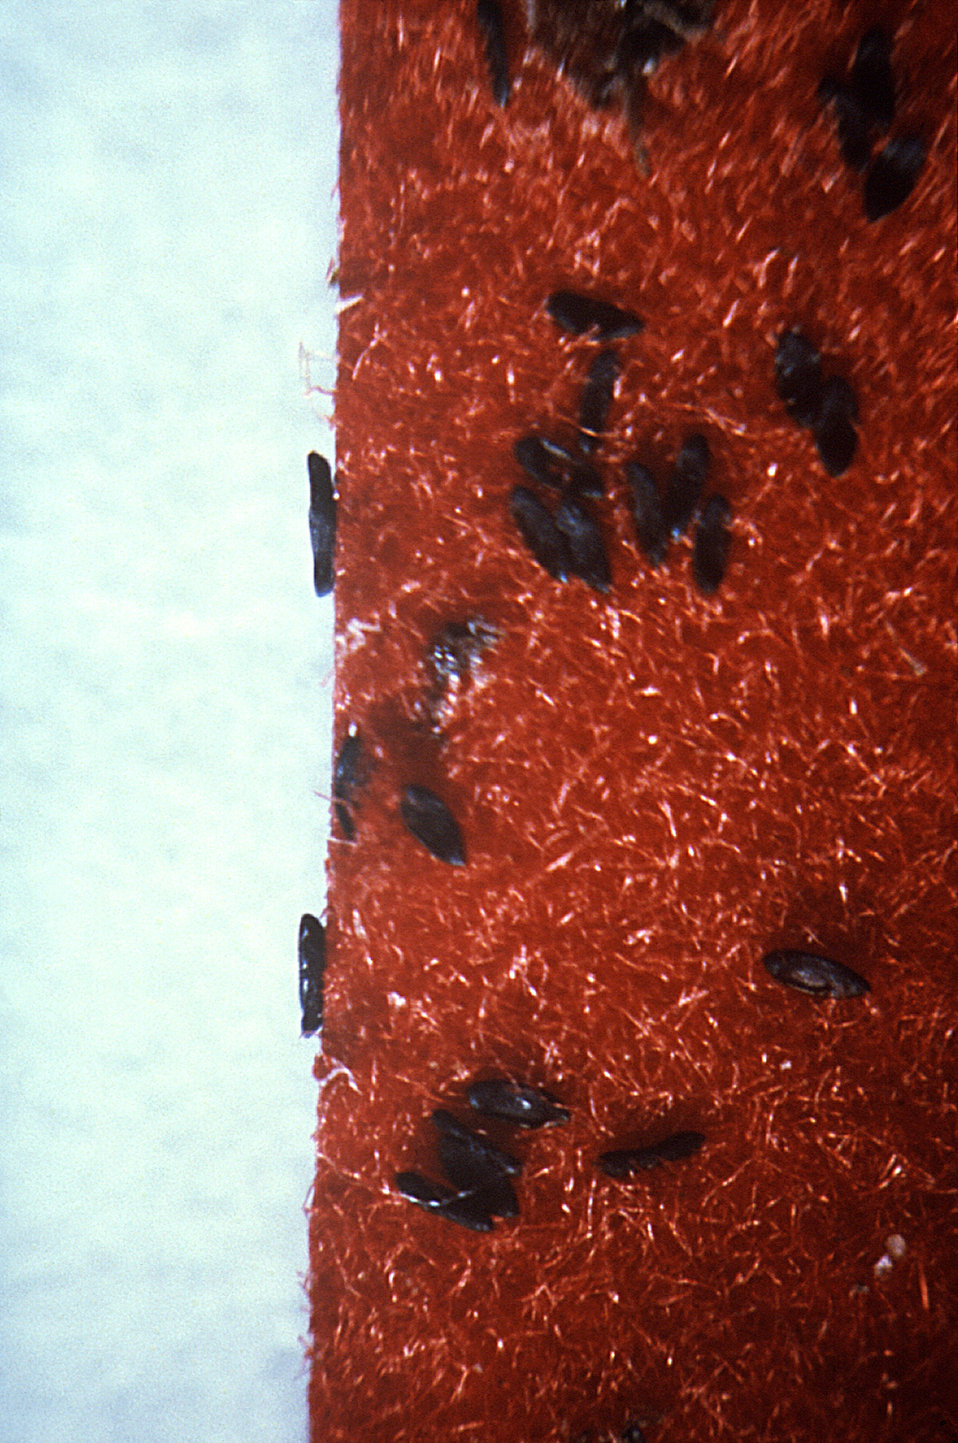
This photograph depicts a group of mosquito eggs deposited by a female Aedes triseriatus mosquito upon velour paper; Mag. 60x.